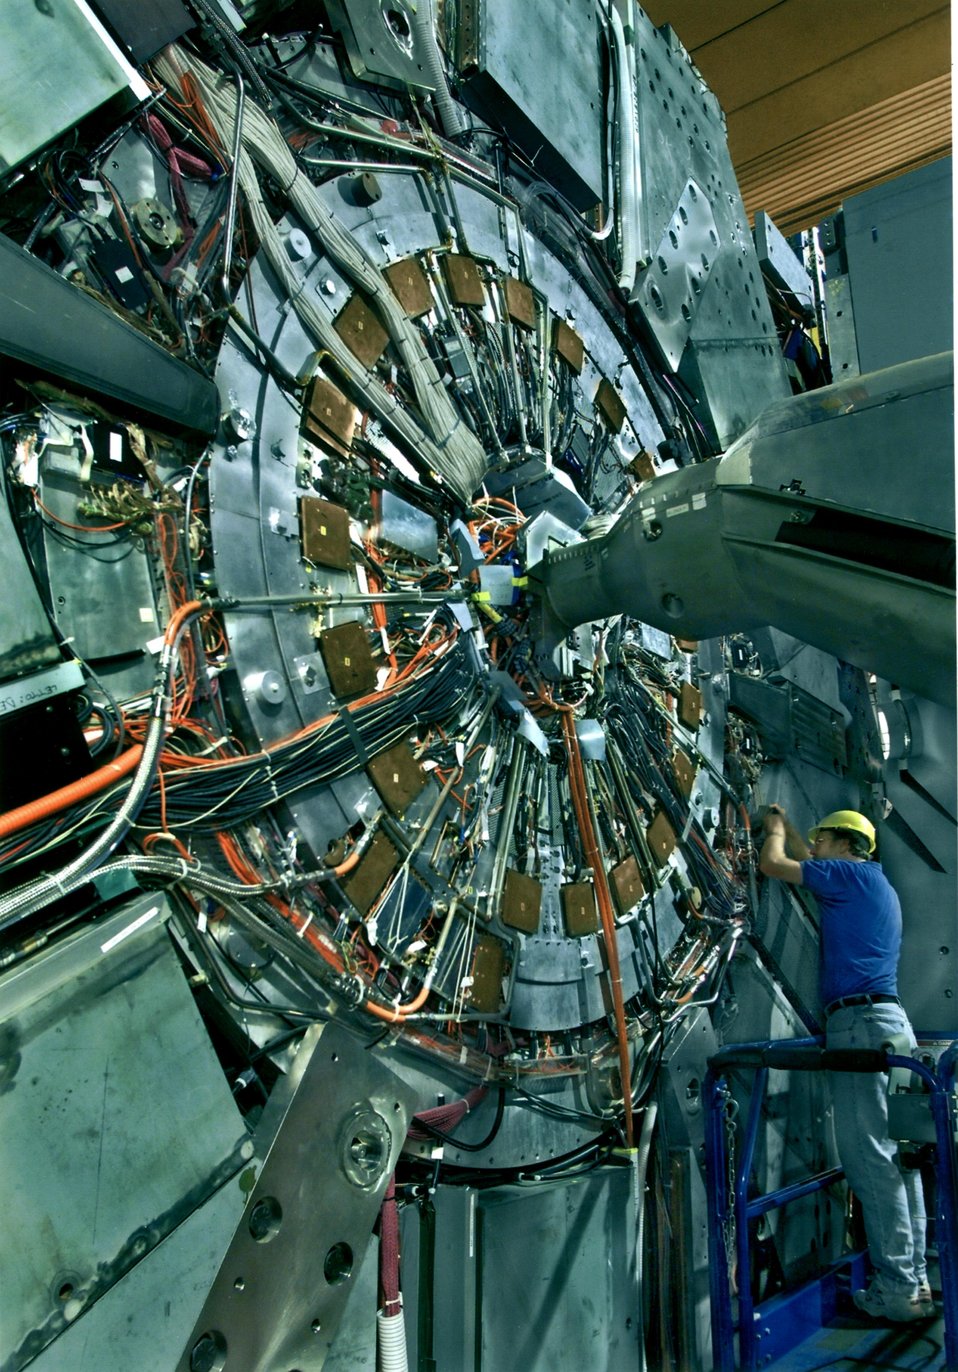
TECHNICIAN AT THE B FACTORY'S HUGE BABAR DETECTOR SYSTEM AT THE STANFORD LINEAR ACCELERATOR CENTER.

BABAR IS A 1200 TON DETECTOR SYSTEM THAT CAN SIFT THROUGH THE 238 MILLION BEAM CROSSINGS THAT WILL OCCUR EVERY SECOND IN THE B FACTORY AND ANALYZE THE THREE TO FOUR EVENTS THAT CAN BEST BE STUDIED FOR CP VIOLATION (CHARGE-CONJUGATION/PARITY). THE BABAR DETECTOR SYSTEM AFFORDS SCIENTISTS FROM LBNL, LLNL AND SLAC THE OPPORTUNITY TO STUDY THE DIFFERENCE BETWEEN MATTER AND ANTIMATTER AND PLAYS A LARGE ROLE IN THE UNDERSTANDING OF NATURE AND MATTER.